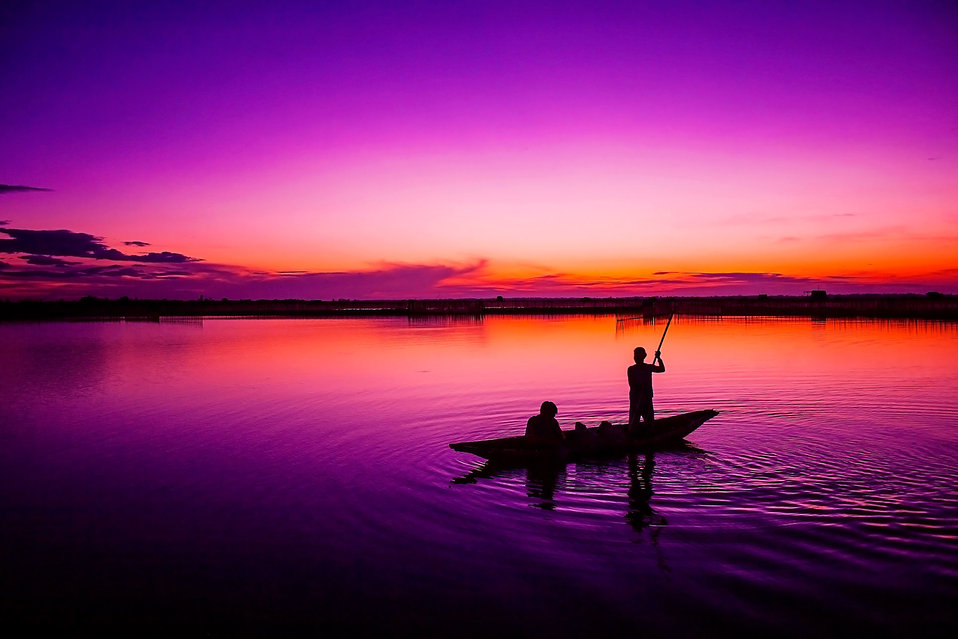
Fishing in sunrise

A couple of fishermen are fishing in a lagoon in hue province, vietnam..